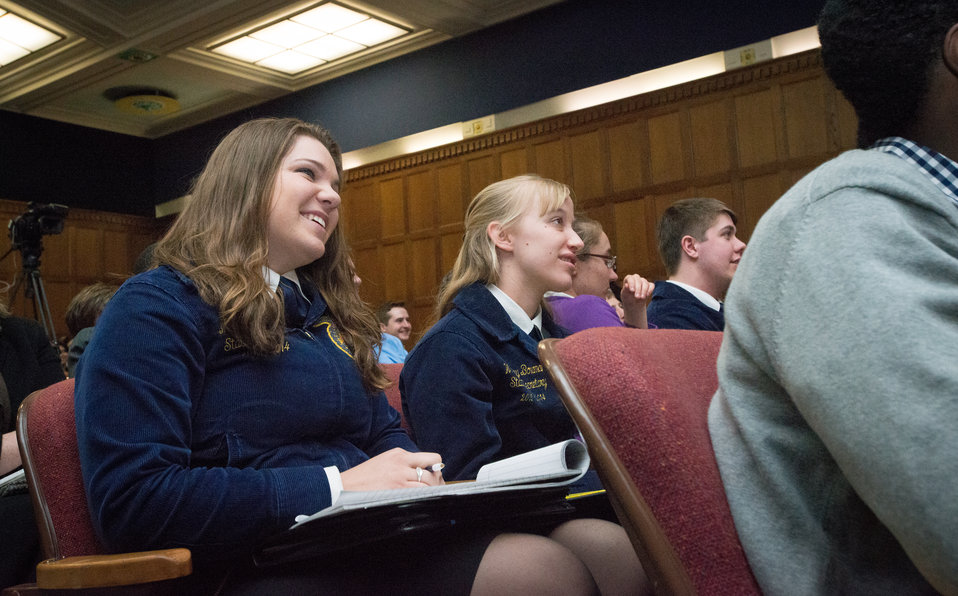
Students listen to the discussion panels at he Borlaug Symposium commemorating the late Dr. Norman Borlaug's 100th Birthday and vision, held in the Jefferson Auditorium of the U.S. Department of Agriculture (USDA) in Washington, D.C. on Tuesday, Mar. 25, 2014. The symposium highlights current efforts addressing global hunger. The symposium panels will feature high school and university students, as well as, scientists and policy advisors at Monsanto Chief Technology Officer Robb Farley talks about mobile communication and it's relationship to agriculture, at the Borlaug Symposium commemorating the late Dr. Norman E. Borlaug's 100th Birthday hosted by the U.S. Department of Agriculture (USDA) in the Jefferson Auditorium of USDA in Washington, D.C. on Tuesday, Mar. 25, 2014. The symposium will highlight current efforts addressing global hunger. The symposium panels will feature high school and university students, as well as, scientists and policy advisors at U.S. Agency for International Development (USAID), USDA and Non-Governmental Organizations (NGO). The symposium was planned in partnership with: U.S. Agency for International Development (USAID), Cornell University, Iowa State University, University of Minnesota, The Norman Borlaug Institute for International Agriculture, Texas A and M University, and the World Food Prize.